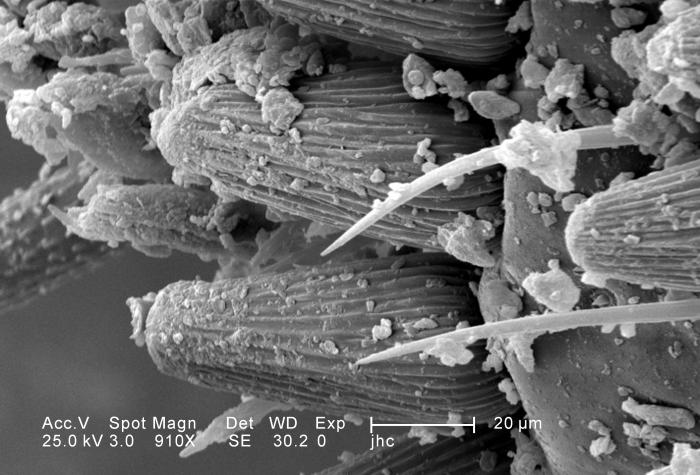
Under a moderately-high magnification of 910X, twice that of PHIL 11797, this scanning electron micrograph (SEM) depicted the ventral caudal abdominal surface of the larval staged antlion, sometimes referred to as a 'doodlebug', because of the trails it leaves in the soft sand as it hunts for prey. This arthropod, i.e., jointed legs, undergoes dramatic morphologic changes when it metamorphoses into a beautiful flying antlion lacewing.